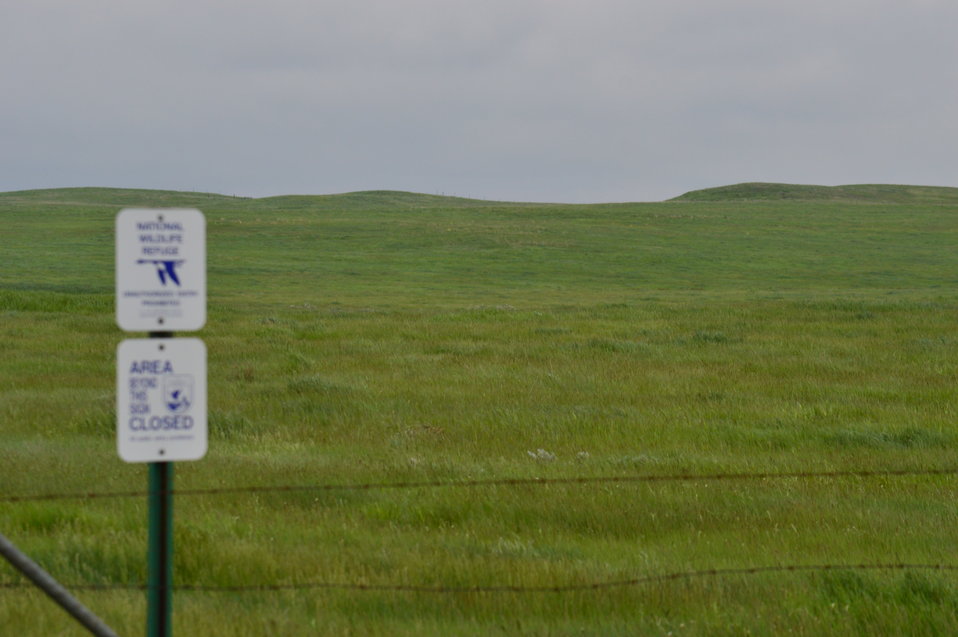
Landscape

Scenery and wildlife at Lake Ilo National Wildlife Refuge in North Dakota.